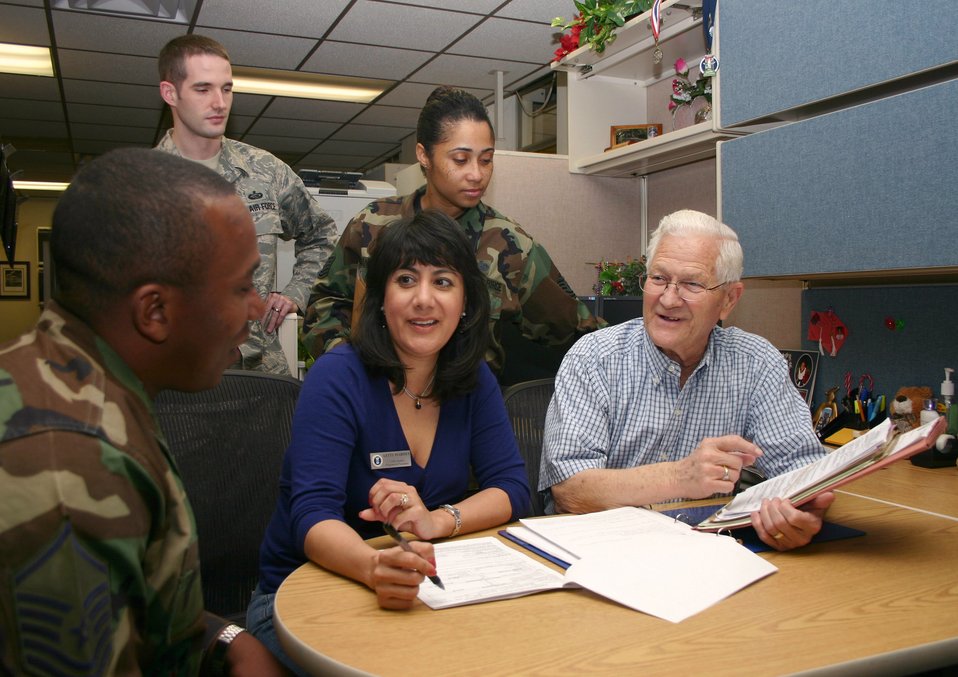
AFPC civilian retires after 57 years of service

Bill Ward briefs exception to policy request cases he will turn over to his co-workers Jan. 25 at the Air Force Personnel Center at Randolph Air Force Base, Texas. Mr. Ward's co-workers are Master Sgt. Cameron Jones (from left), Tech. Sgt. Jeff Gilbert, Letti Inabinet and Tech. Sgt. Yahil Sanchez.